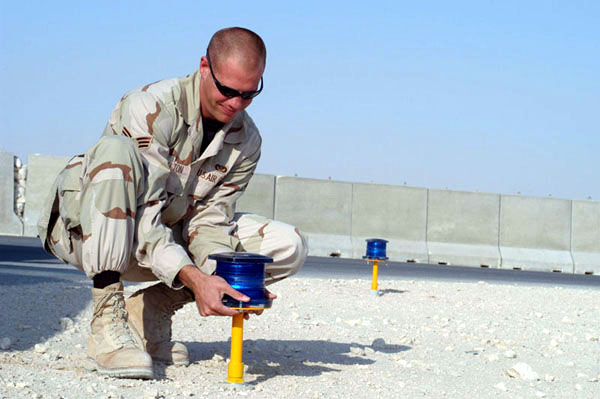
Civil engineers' work noticed every day

SOUTHWEST ASIA -- Senior Airman Michael Hesselton installs a solar-powered taxiway light at a forward-deployed location. Airman Hesselton replaced reflectors with the lights, enhancing visibility and safety for aircraft. He is assigned to the 379th Expeditionary Civil Engineer Squadron.